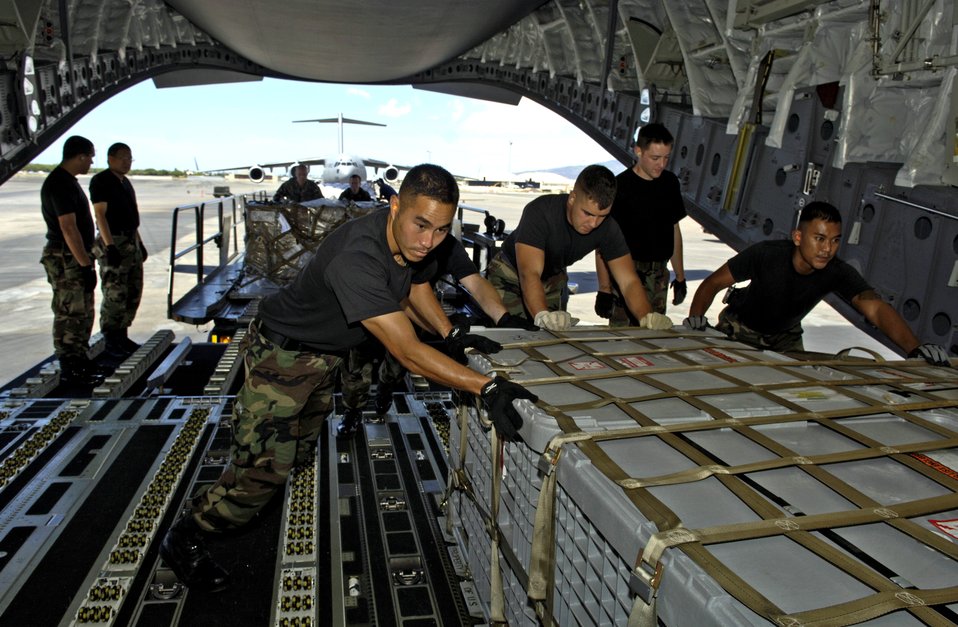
First look at Wake: Less damage than feared

Airmen from the 15th Civil Engineer Squadron load pallets of equipment on a C-17 Globemaster III at Hickam Air Force Base, Hawaii, Sept. 12. The C-17 took a 53-person team to assess damage left by Super Typhoon Ioke after it struck Wake Island Aug. 31.